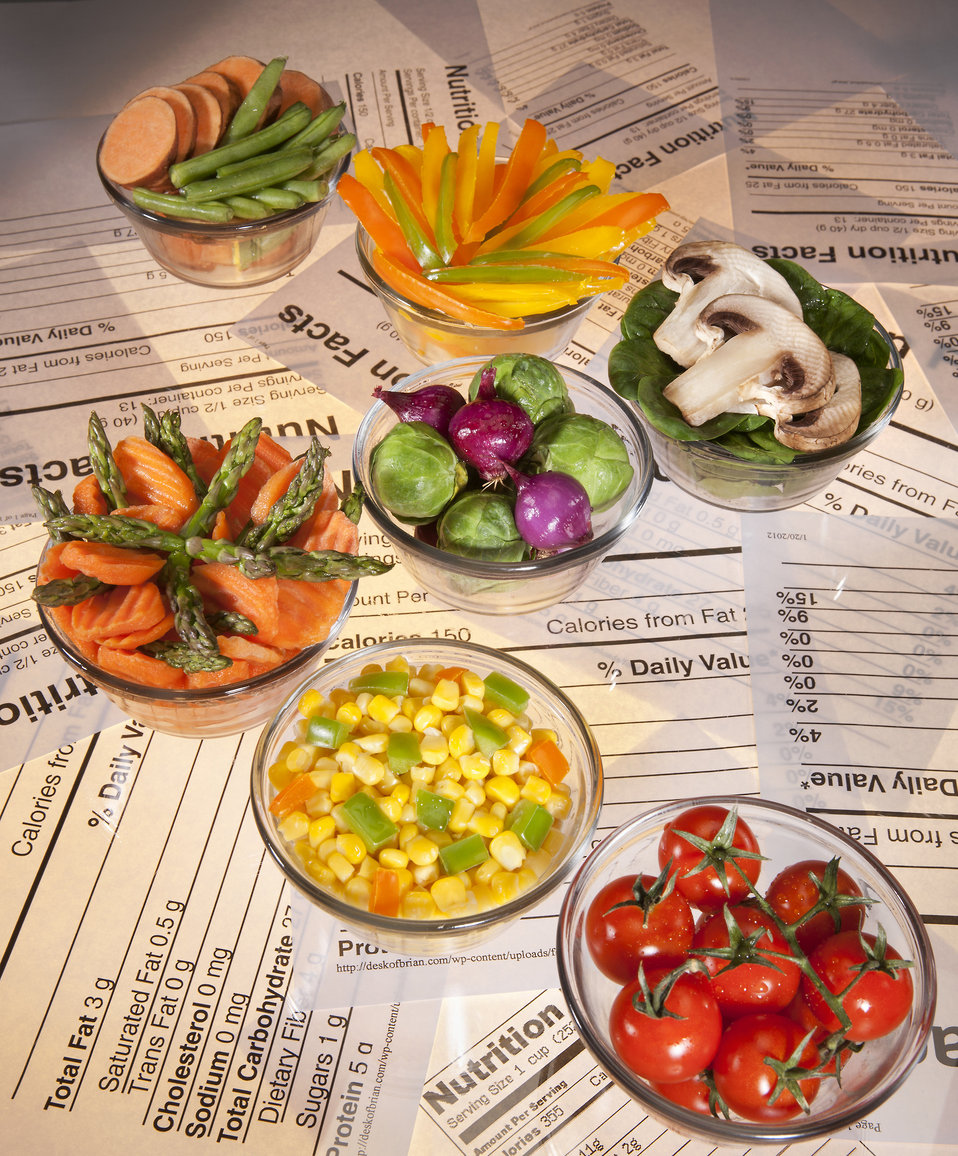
A display of healthy and nutritional foods is shown on June 6, 2003. (top to bottom left to right sweet potatoes and green beans, red, yellow, orange, and green peppers, spinach and mushrooms, carrots and asparagus, brussel sprouts and shallots, corn with green and red peppers, and cherry tomatoes).